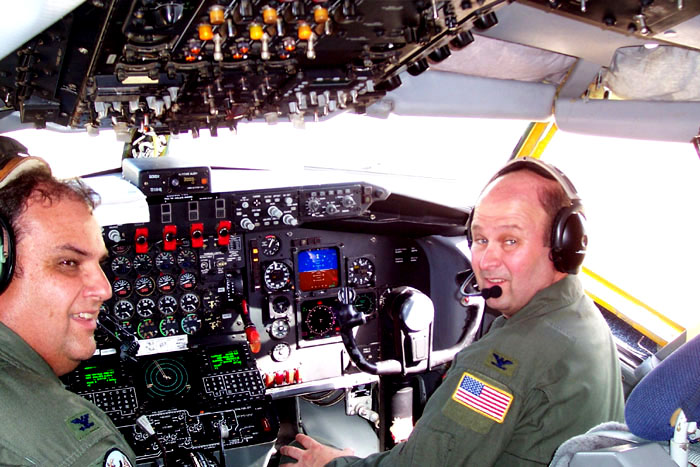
Reserve wing will be first to host Guard associate

Col. James McCormack and Col. Jeffery Glass prepare for takeoff during their first duo commander mission July 26 at Tinker Air Force Base, Okla. Colonel McCormack is the 137th Airlift Wing commander, and Colonel Glass is the 507th Air Refueling Wing commander. Colonel McCormack's Air National Guard wing is slated to stand up as a KC-135 Stratotanker associate wing affiliated with Colonel Glass's Air Force Reserve Command wing in late 2007. The merger is the first time an Air National Guard wing has associated to an Air Force Reserve wing.